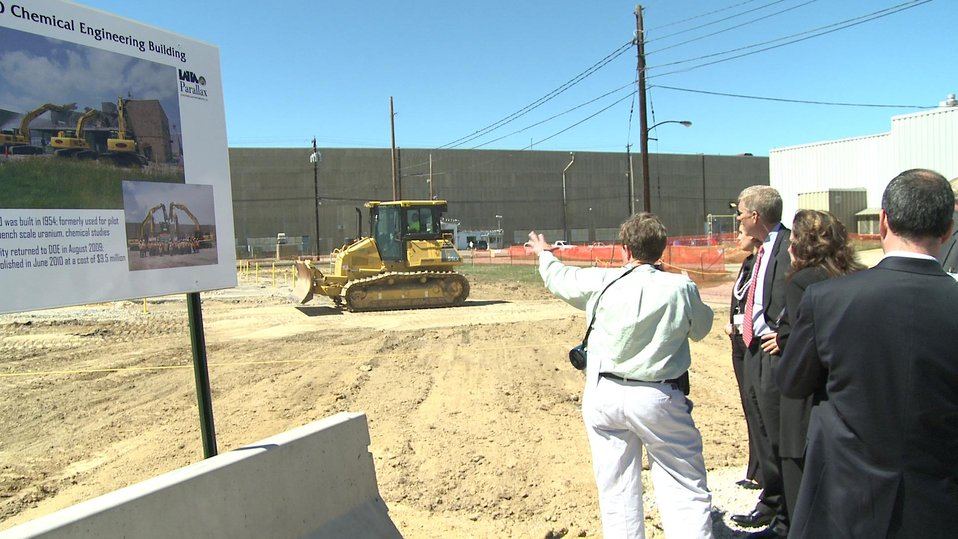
LATA/Parallax Portsmouth Project Manager Linda Bauer points out to Deputy Secretary Poneman the site where the X-760 Chemical Engineering Building once stood at the Portsmouth Site. Demolition of the 8,000 square foot structure was completed in mid-June with $9.5 million in Recovery Act funding.